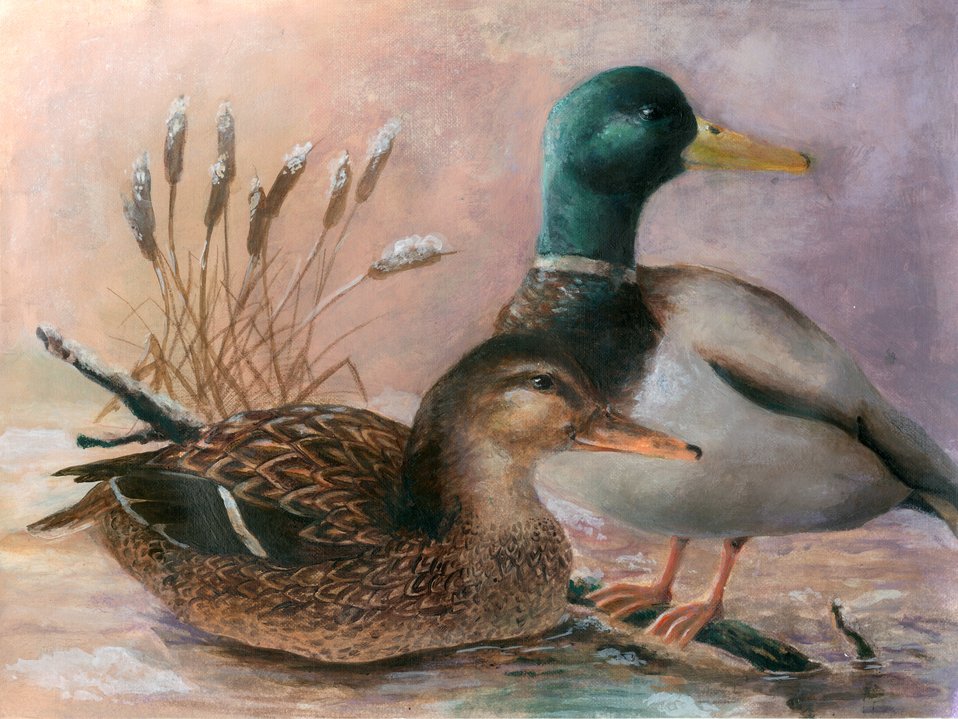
NewHampshire

2012 Jr Duck Stamp Program
State Best of Show
New Hampshire